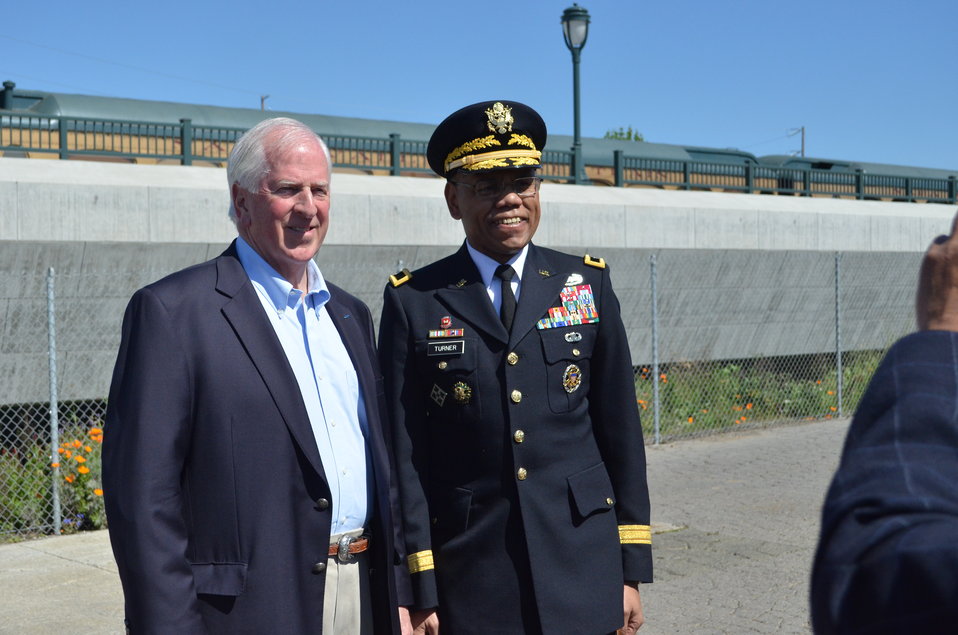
Corps joins Rep. Mike Thompson, Napa officials to break ground on new dry bypass

Brigadier Gen. David Turner, commander for the U.S. Army Corps of Engineers’ South Pacific Division, poses for a photo with Rep. Mike Thompson during a ground breaking ceremony April 5, 2014, to begin construction on a dry bypass in Napa, Calif. Construction of the dry bypass will wrap up more than a decade of flood risk reduction work in downtown Napa.